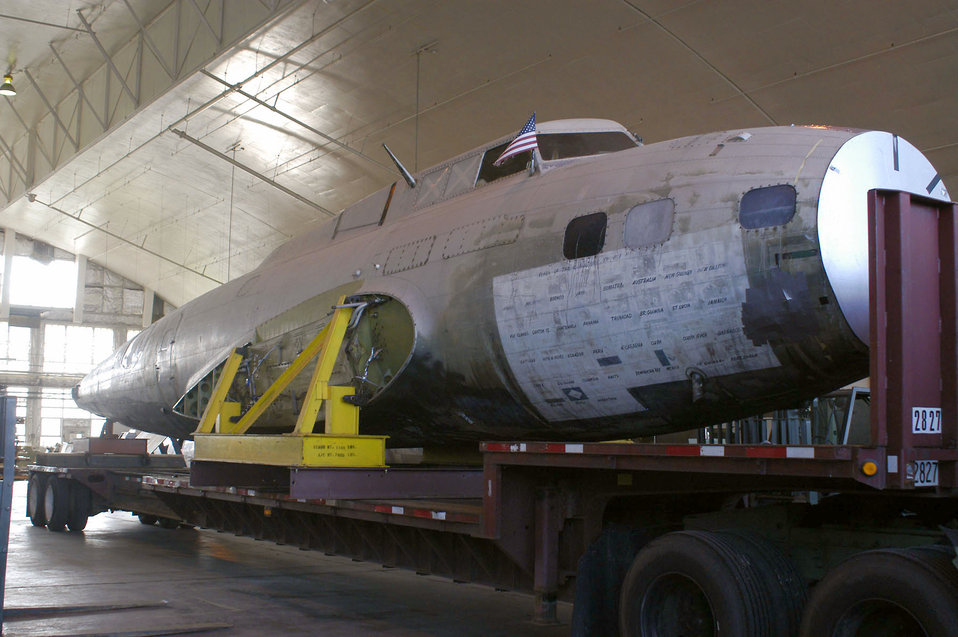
'The Swoose' finds new home at National Museum of the U.S. Air Force

The fuselage of the B-17D The Swoose sits on a trailer shortly after its arrival to the restoration facility at the National Museum of the U.S. Air Force near Dayton, Ohio.